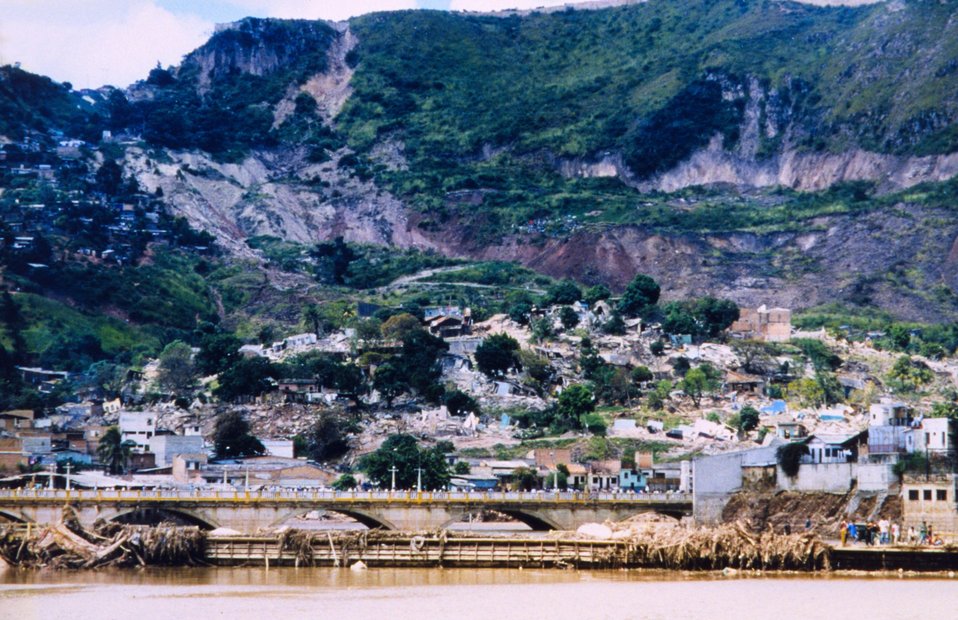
Flood damage along the Choluteca River caused by Hurricane Mitch. Over 9,000 deaths and 9,000 missing were attributed to Mitch making it the second most deadly hurricane in history ranking only below a 1780 hurricane in the Lesser Antilles.